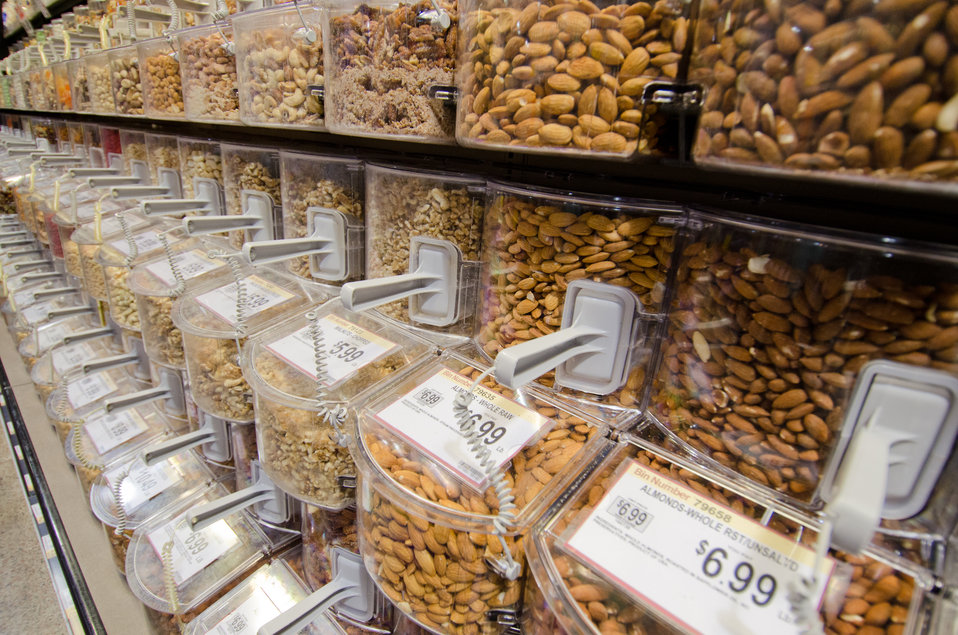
Nuts and dried produce, in self-serve bins, at a grocery store in Fairfax, Virginia, on March 3, 2011.